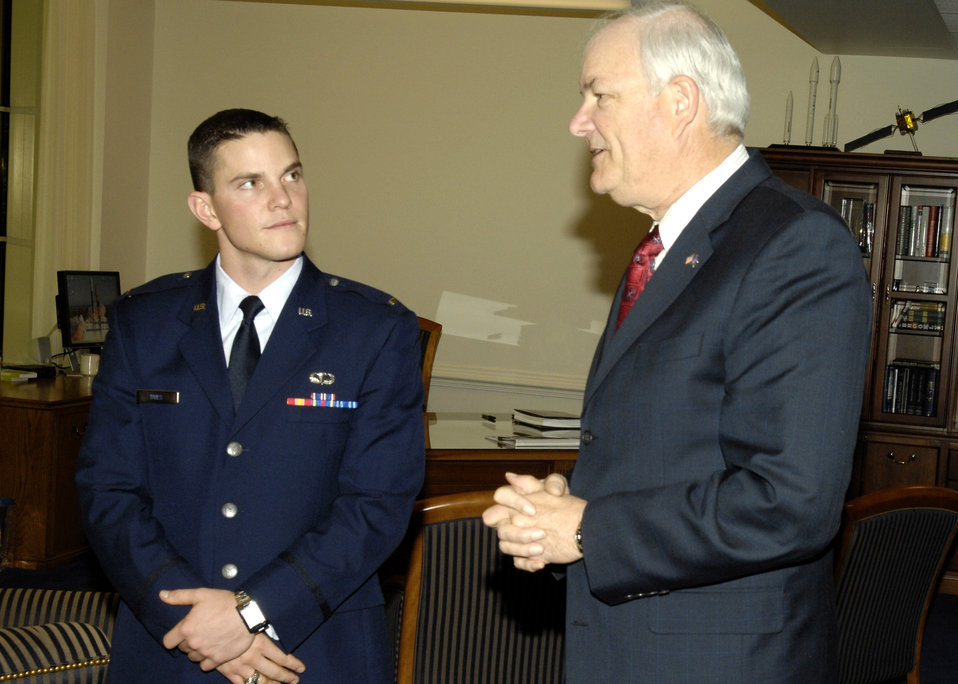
Cadet of the Year

Secretary of the Air Force Michael W. Wynne speaks with 2nd Lt. Brandon T. Dues, a graduate of the Air Force Academy last May. Lieutenant Dues is the recipient of the 2007 Cadet of the Year award. The award recognizes the most outstanding cadet in an Air Force commissioning program.